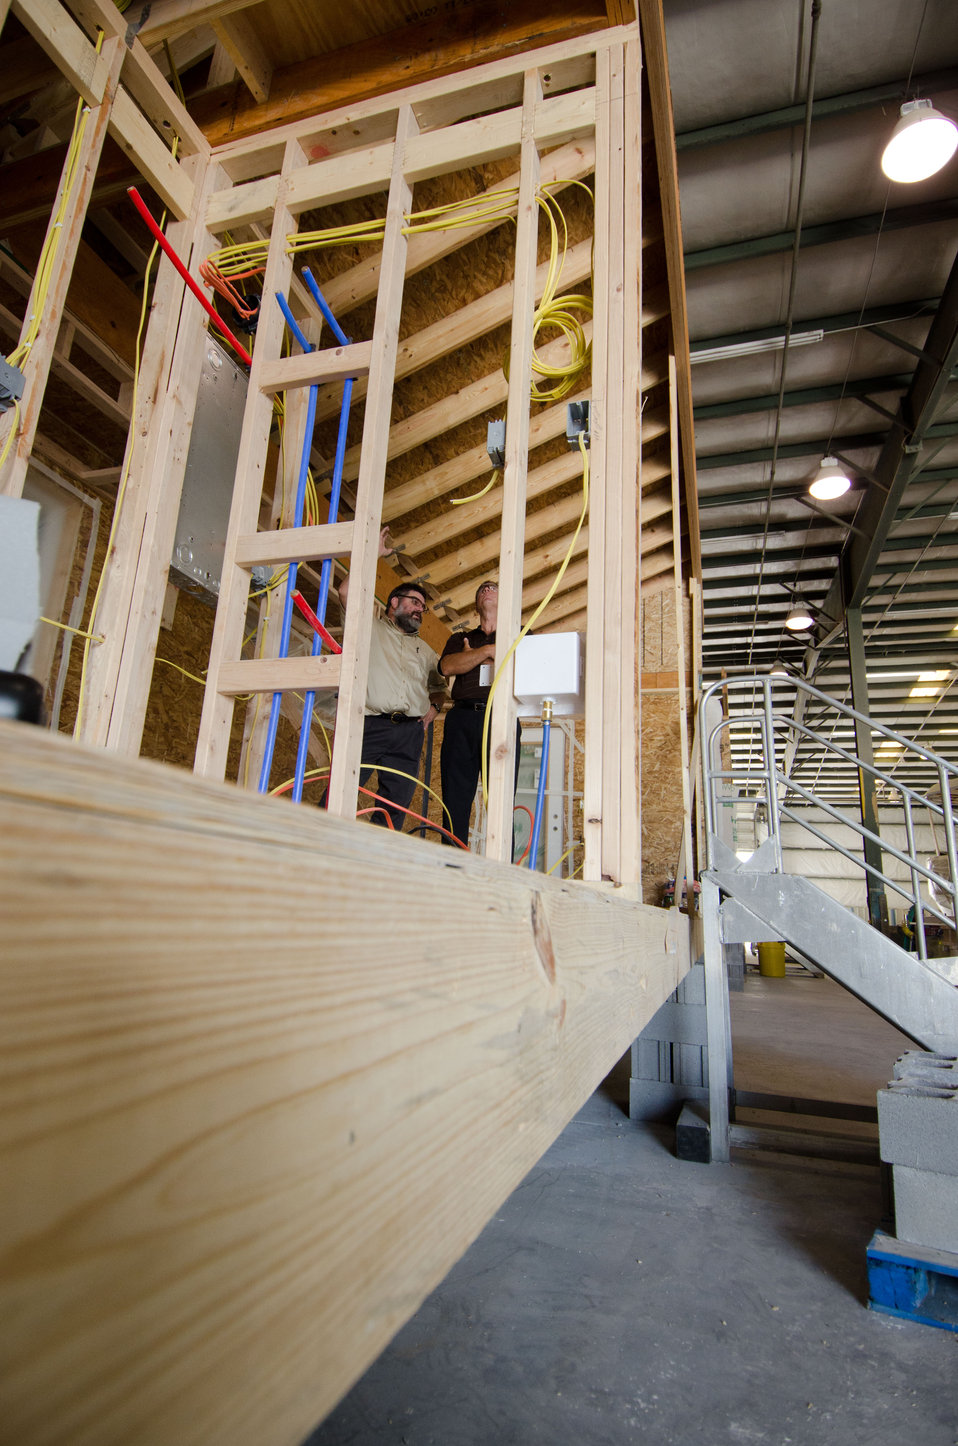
Extra thick foam filled floors and exterior walls add to the climate sealing and energy efficiency of a new type of manufactured home from Stardust Industries on Wednesday, July 13, 2011 in Monticello, KY. They are helping retool and redirect Kentucky’s houseboat manufacturing industry – which has been decimated because of the struggling economy – by using its facilities and manpower to create low-cost housing that is energy efficient. Rural Development obligated $499,000 in Rural Business Enterprise Grant funds to support this unique endeavor. Up until a few years ago, there were several successful houseboat manufacturers in the four-county area surrounding the city of Somerset. Most have now ceased operation or drastically reduced output, which has led to dramatic, long-term job loss. These new energy efficient homes will be constructed in redesigned, refitted houseboat factories using local workers that have been retrained.